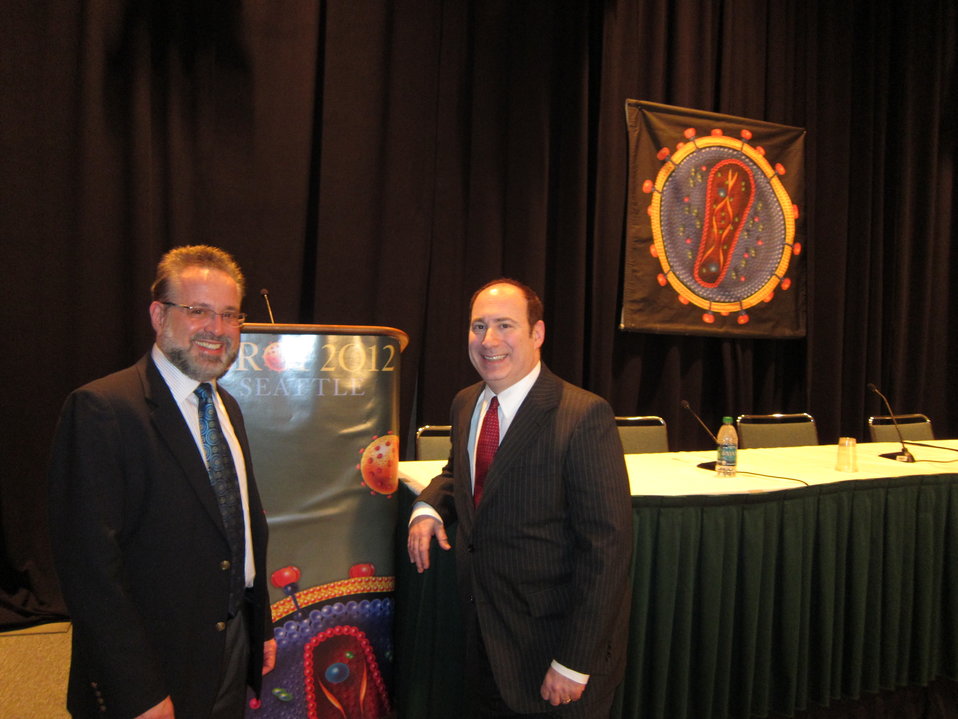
Drs V. and Horberg to be used for our podcast from CROI highlighting a PACHA member